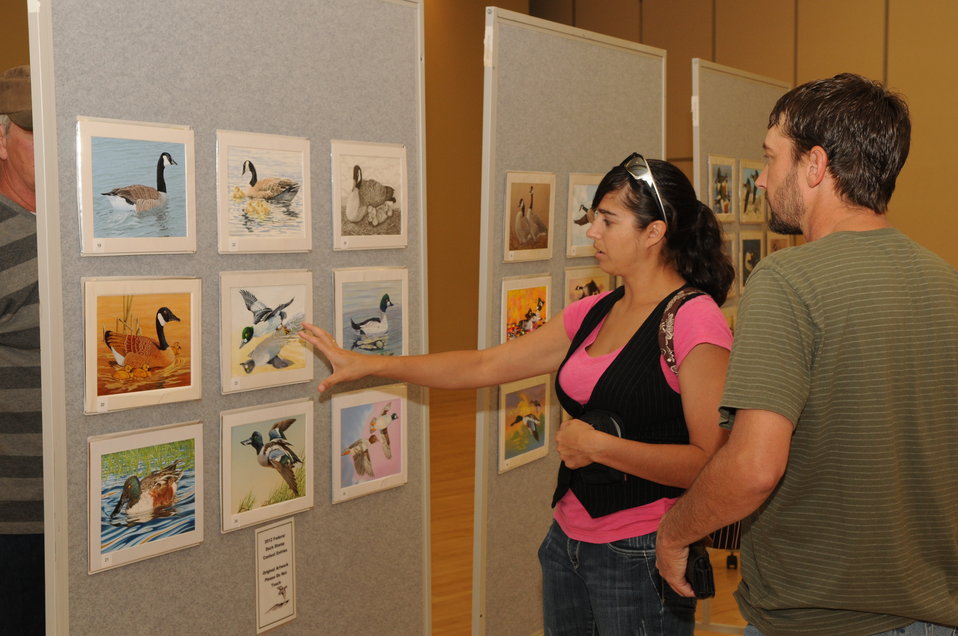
Artwork Viewing

The U.S. Fish & Wildlife Service sponsored the 2012 Federal Duck Stamp Art Contest September 28 and 29 in Ogden, Utah, at Weber State University. A panel of five judges was responsible for choosing the art work used to design the 2013-2014 Migratory Bird Hunting and Conservation Stamp.